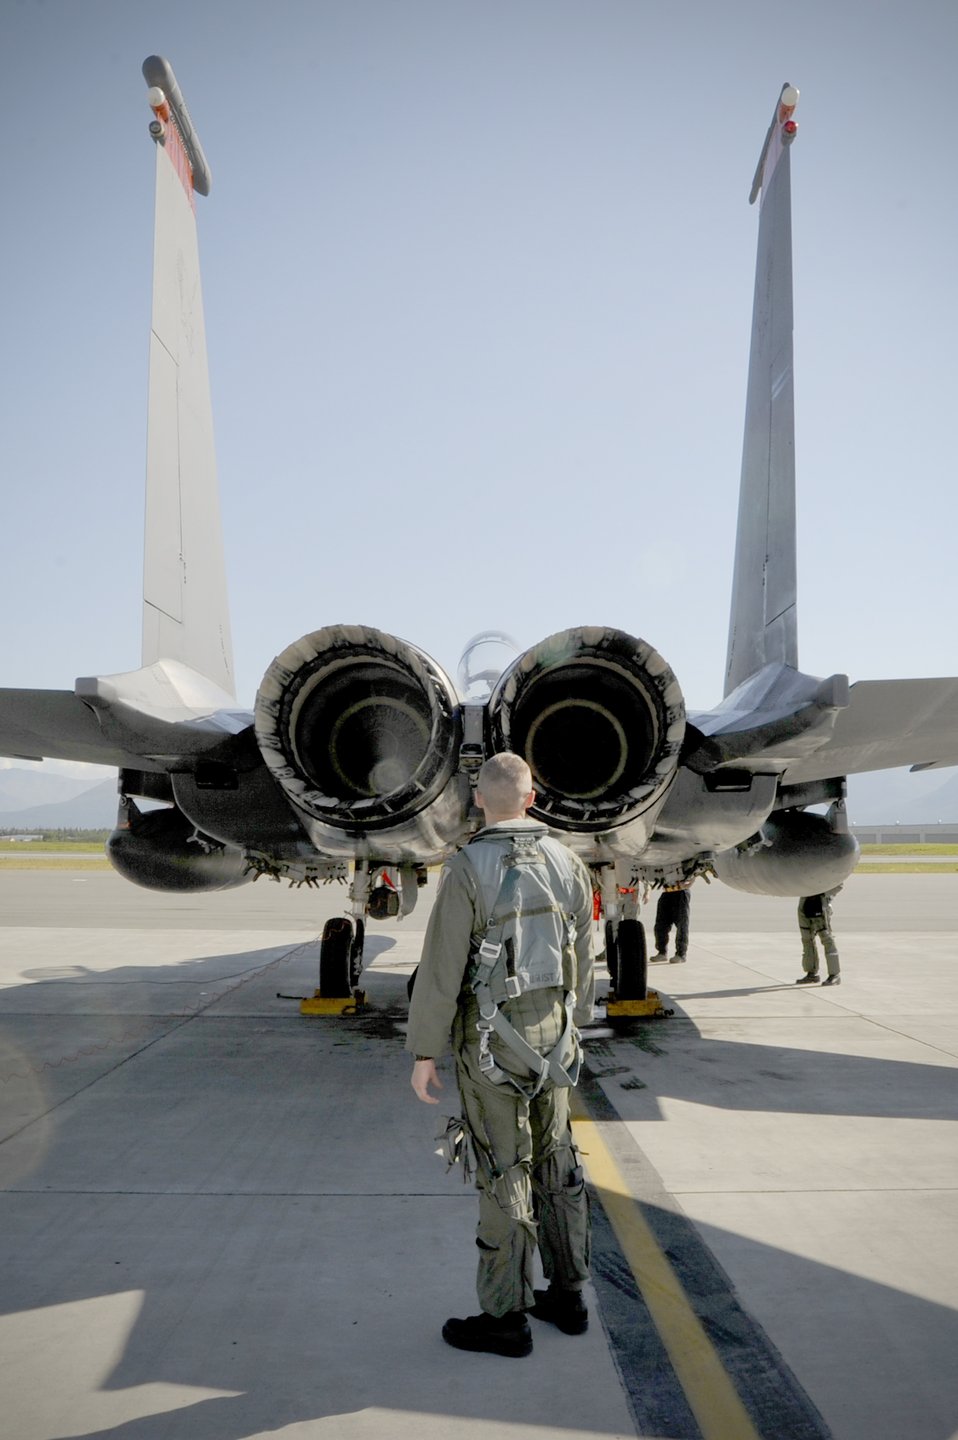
Eagles aid Predators

Capt. David Gunter inspects the exhaust of an F-15E Strike Eagle during pre-flight Aug. 25, 2010, at Joint Base Elmendorf-Richardson, Alaska. Captain Gunter and the F-15E Strike Eagles are assigned to the 391st Fighter Squadron out of Mountain Home Air Force Base, Idaho.